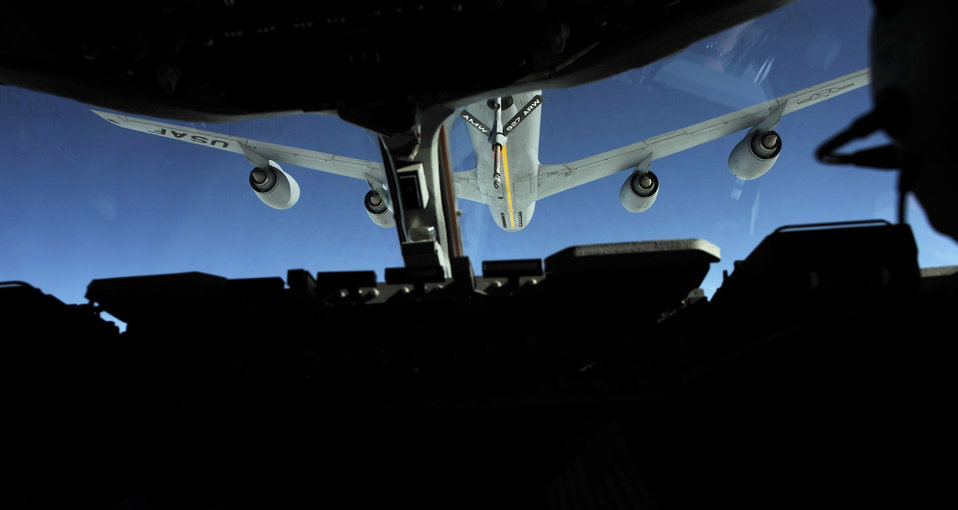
Charleston aircrew refuel near MacDill

Lt. Col. Brian Loehrke maneuvers a C-17 Globemaster III into position under a KC-135 Stratotanker from MacDill Air Force Base, Fla., March 12, 2010, during an air refueling operation. Colonel Loehrke is from the 300th Airlift Squadron at Charleston AFB, S.C.